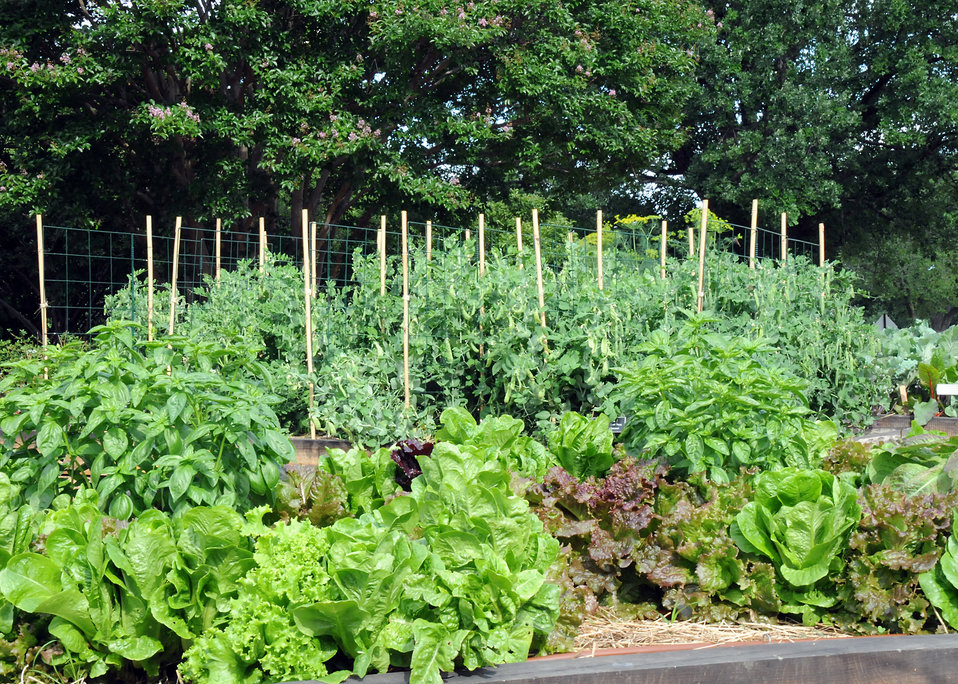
On Friday, May 28, 2010 the Department of Agriculture People’s Garden in Washington, DC is ready for the harvesting of its first crop of vegetables (peas, lettuces, beets, kohlrabi, and turnip greens). USDA photo 10di1383-18.